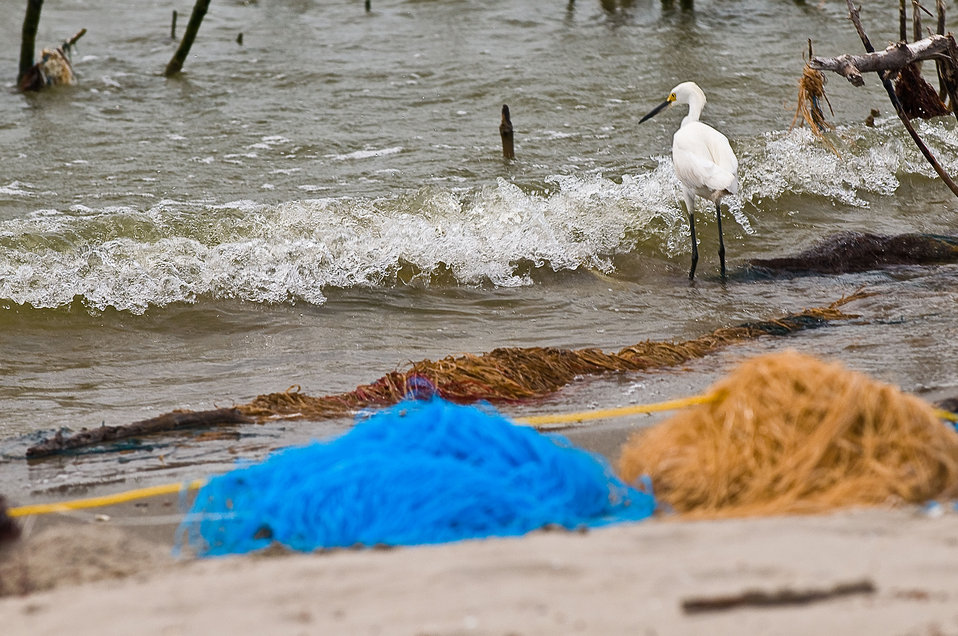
June 2, Oil absorbing 'pom poms' line beaches to